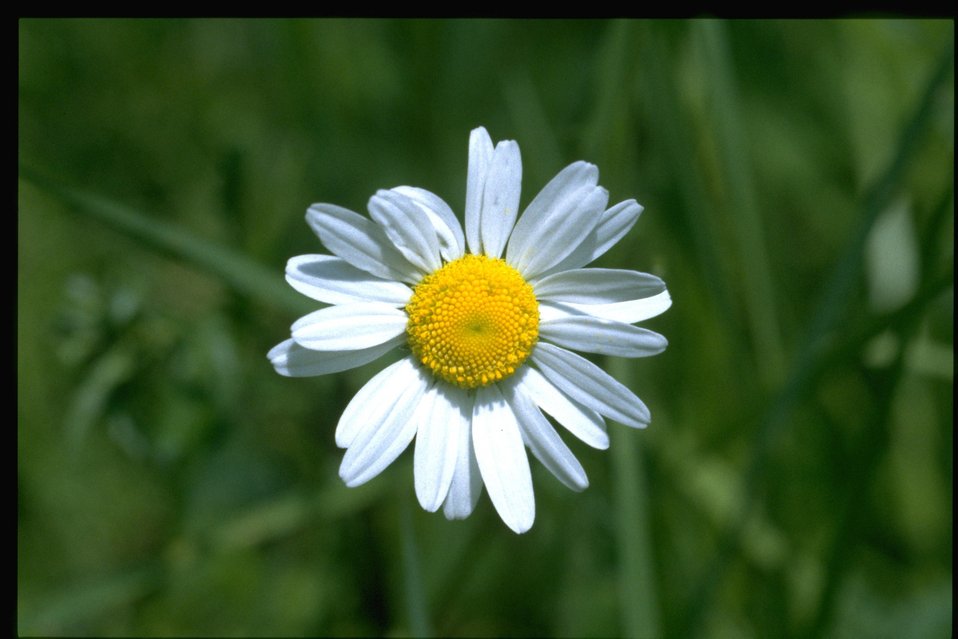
Closeup shot of Asteraceae.